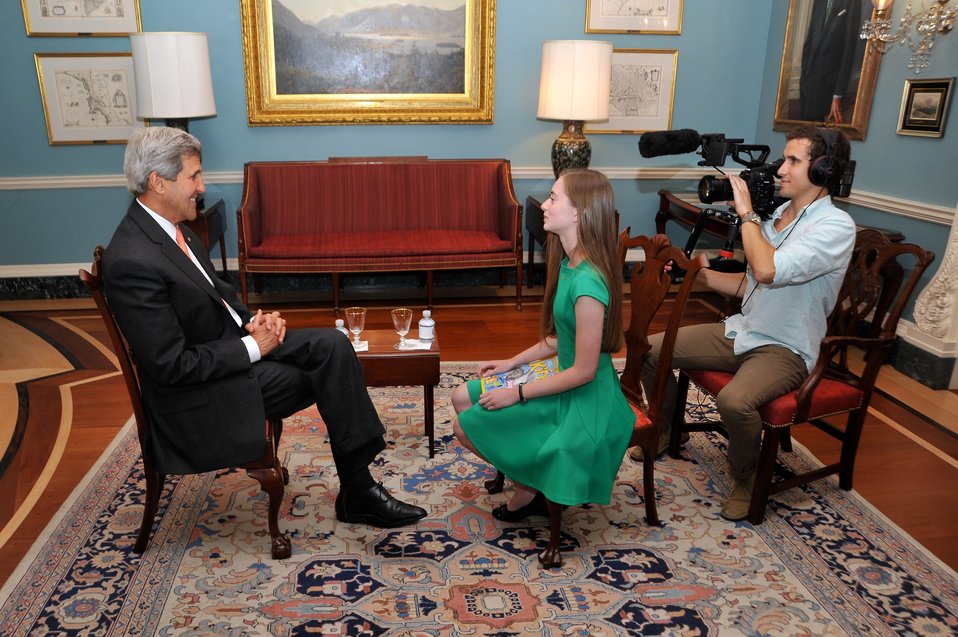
Secretary Kerry Participates in an 'Our Ocean' Conference Interview With National Geographic Kids Reporter Moore

U.S. Secretary of State John Kerry participates in an 'Our Ocean' Conference Interview With National Geographic Kids Reporter Moore at the U.S. Department of State in Washington, D.C. on June 17, 2014.